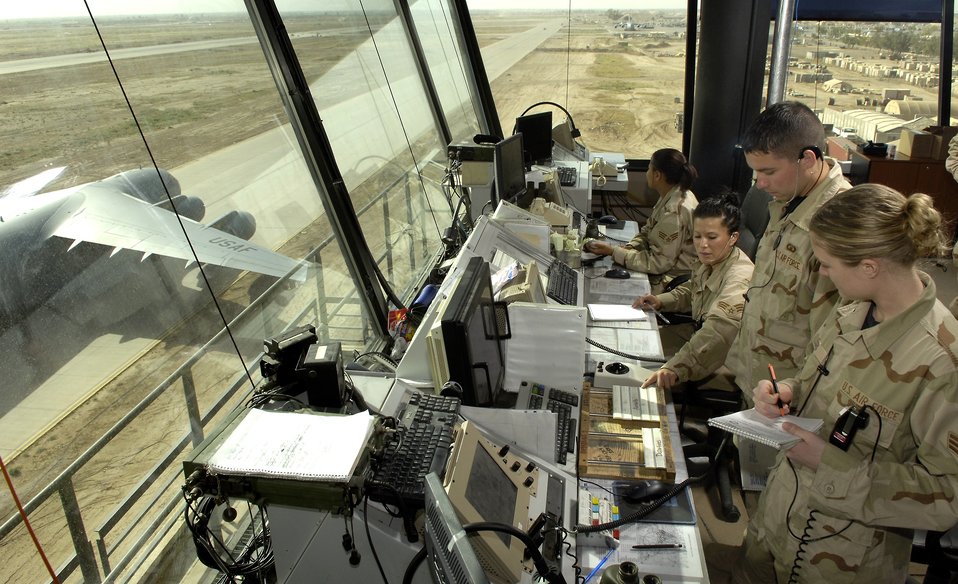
Balad remains one busy airfield

Senior Airman Cortney Goes (front to rear), Staff Sgt. Pete Solzano, Senior Airmen Sherrilyn Ceja and Nicole Lundie control aircraft flying into and out of Balad Air Base, Iraq, the busiest single-runway airfield in the Department of Defense. A C-17 Globemaster III taxis past the control tower on Monday, May 15, 2006.